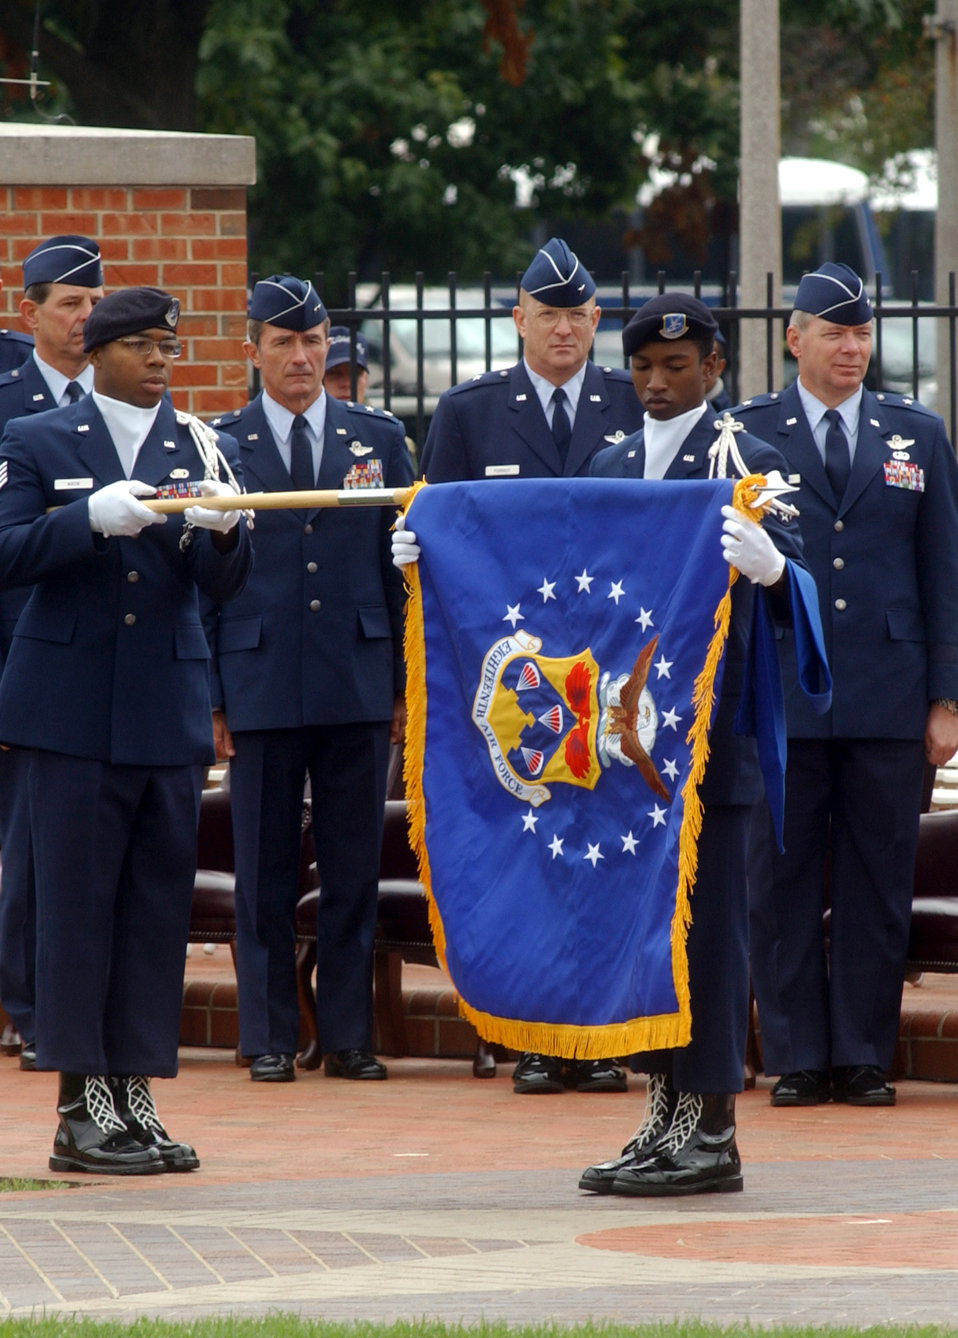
18th Air Force reborn

SCOTT AIR FORCE BASE, Ill. -- Airman 1st Class Leonard McCall and Staff Sgt. Anthony Nixon unfurl the 18th Air Force flag during the reactivation ceremony here Oct. 1. They are part of the Air Mobility Command Elite Guard.